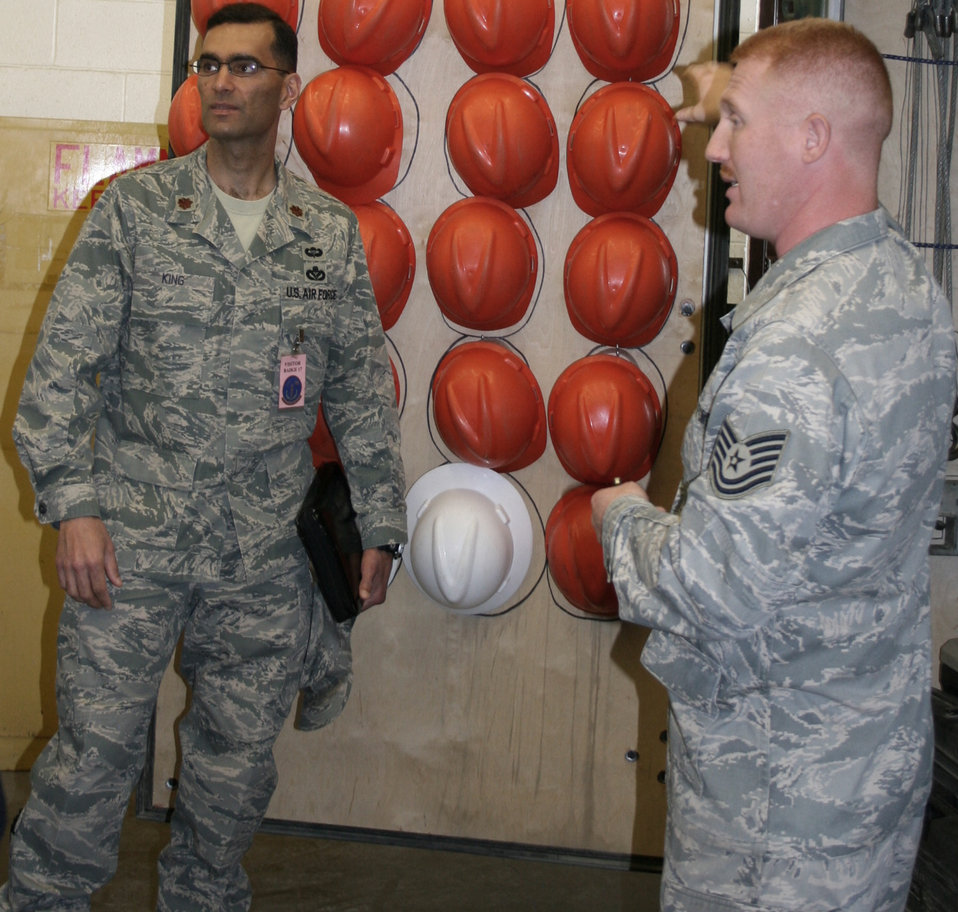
Squadron Airmen improve following improvement event

Maj. James King and Tech. Sgt. Joshua Horton inspect the mobility bins as part of a Rapid Improvement Event recently. The event was held March 30 thru April 3 as part of the Air Force Smart Operations of the 21 Century to help maximize value and minimize waste. Major King is a AFSO-21 facilitator-in-training. Sergeant Horton is assigned to the 9th Munitions Squadron.